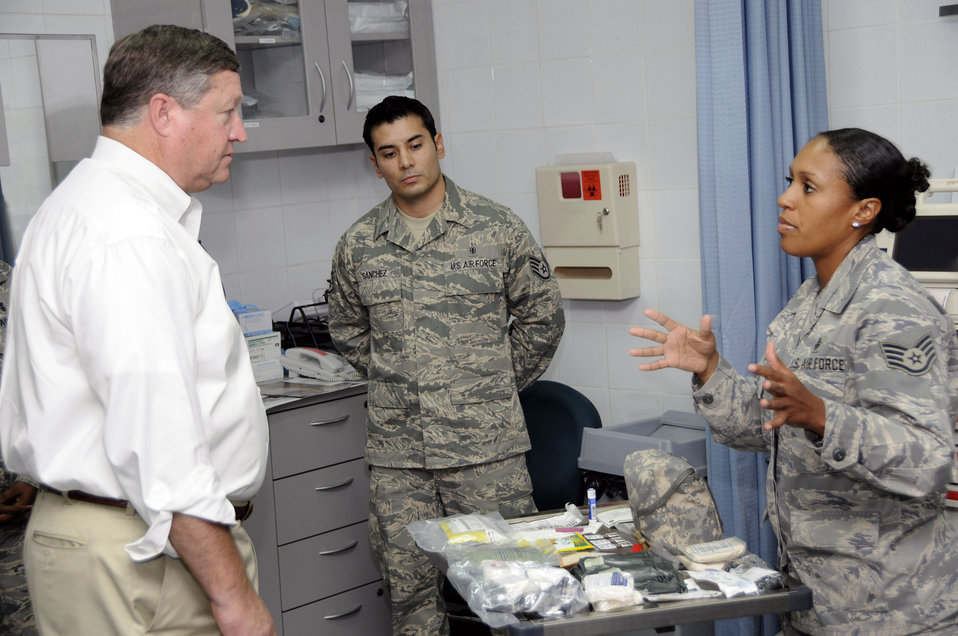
Secretary visits Airmen in Southwest Asia

Staff Sgt. Lizeth Cameron (right) briefs Secretary of the Air Force Michael B. Donley on the individual first aid kit recertification process Oct. 11 at an air base in Southwest Asia. Sergeant Cameron described how members of the 379th Expeditionary Medical Groupand the 379th Expeditionary Logistics Readiness Squadron team together to inspect, replenish and distribute IFAKs for the entire U.S. Air Forces Central area of responsibility. Sergeant Cameron is assigned to the 379th Expeditionary Medical Group.